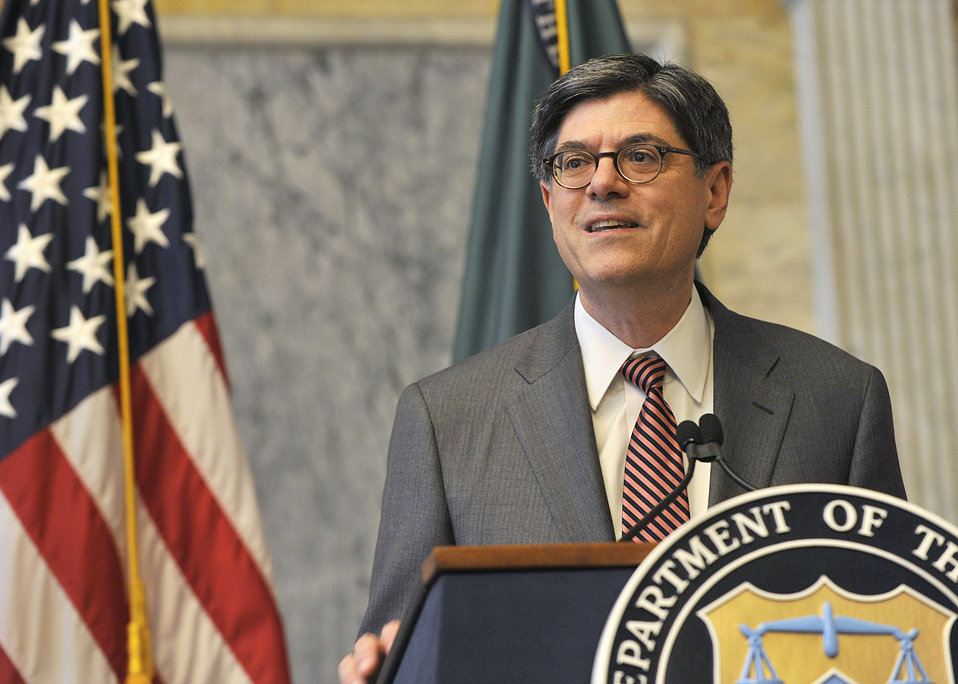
Secretary Lew welcomes Treasury summer interns

On June 4, 2013, summer interns received a warm welcome to the Treasury Department at a gathering in the historic Cash Room.